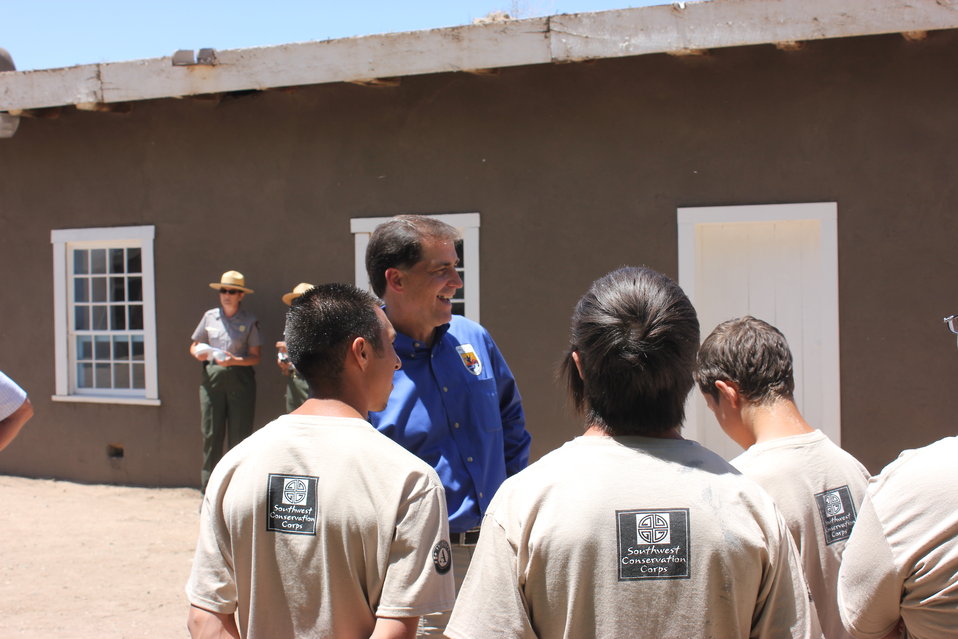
Historic Conservation Easement in Sangre de Cristo Mountains